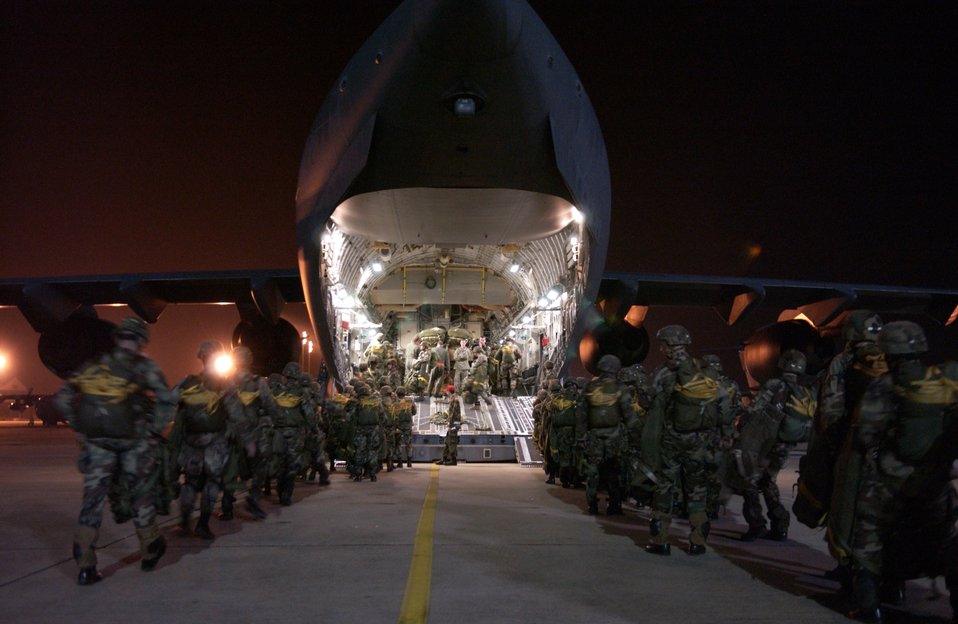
Air Force supports airborne jump

POPE AIR FORCE BASE, N.C. -- Army paratroopers board a C-17 Globemaster III before a night jump during a joint forcible entry exercise Jan. 24. The Soldiers are from the 82nd Airborne Division, Fort Bragg, N.C.